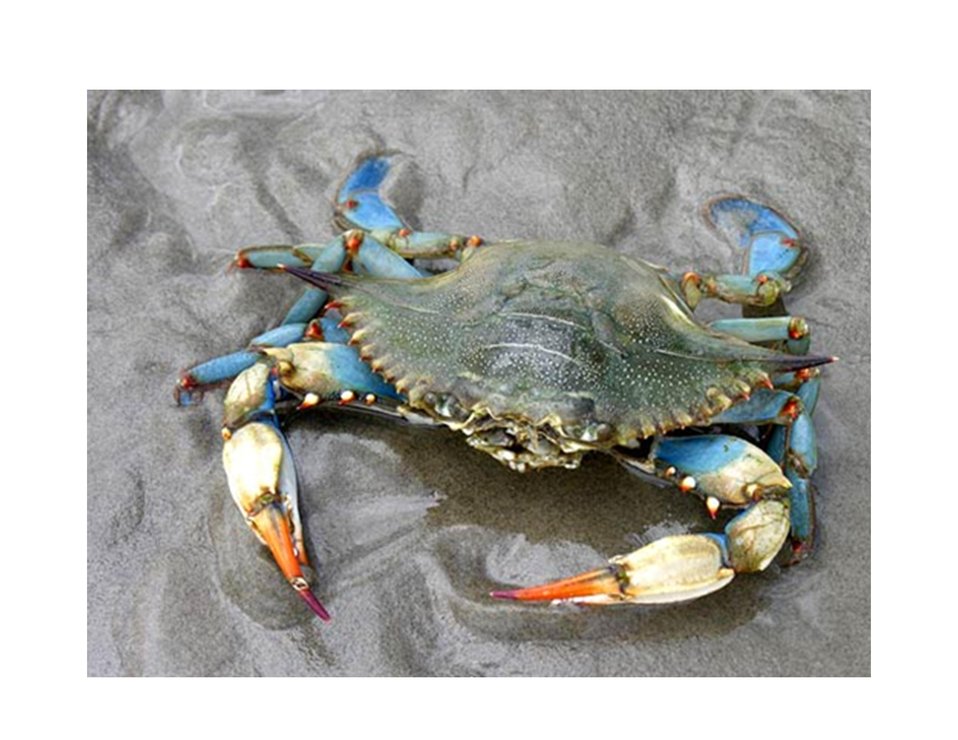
Blue crab on the beach. Louisiana